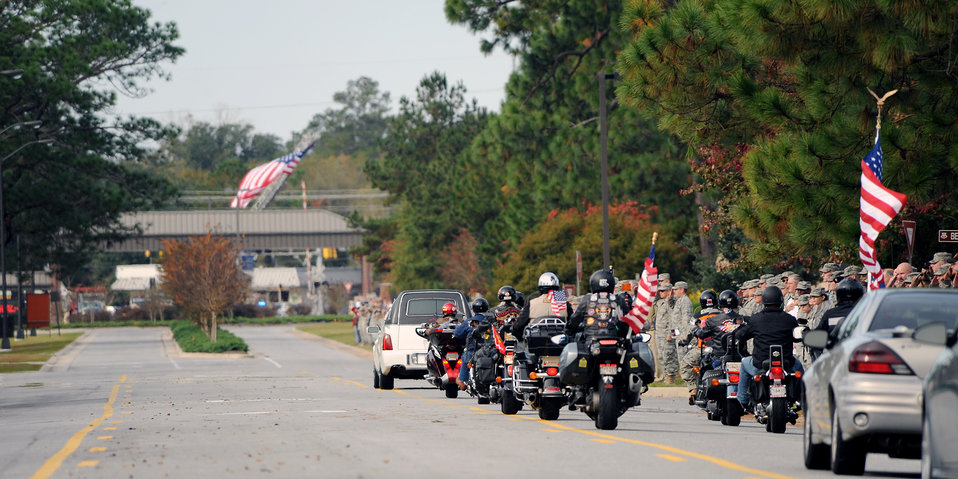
Moody community pay respect to fallen warrior

Patriot Guard Riders follow a hearse carrying Army Staff Sgt Briand T. Williams, a fallen Solider from Fort Benning, Ga., Dec. 3, 2009, at Moody Air Force Base, Ga. Sergeant Williams who is from Sparks, Ga., joined the Army seven years ago.